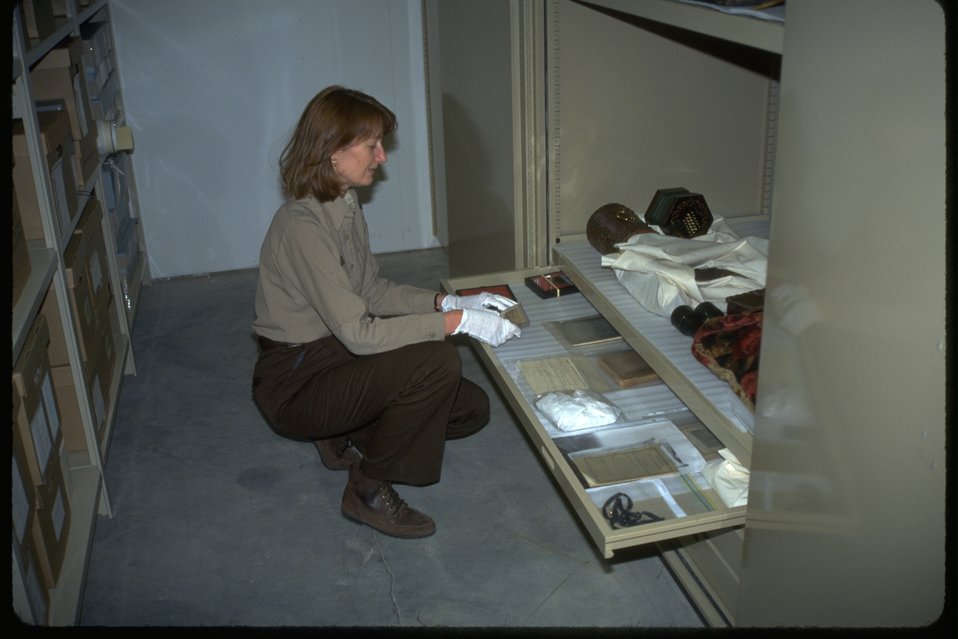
Artifact collection storage.